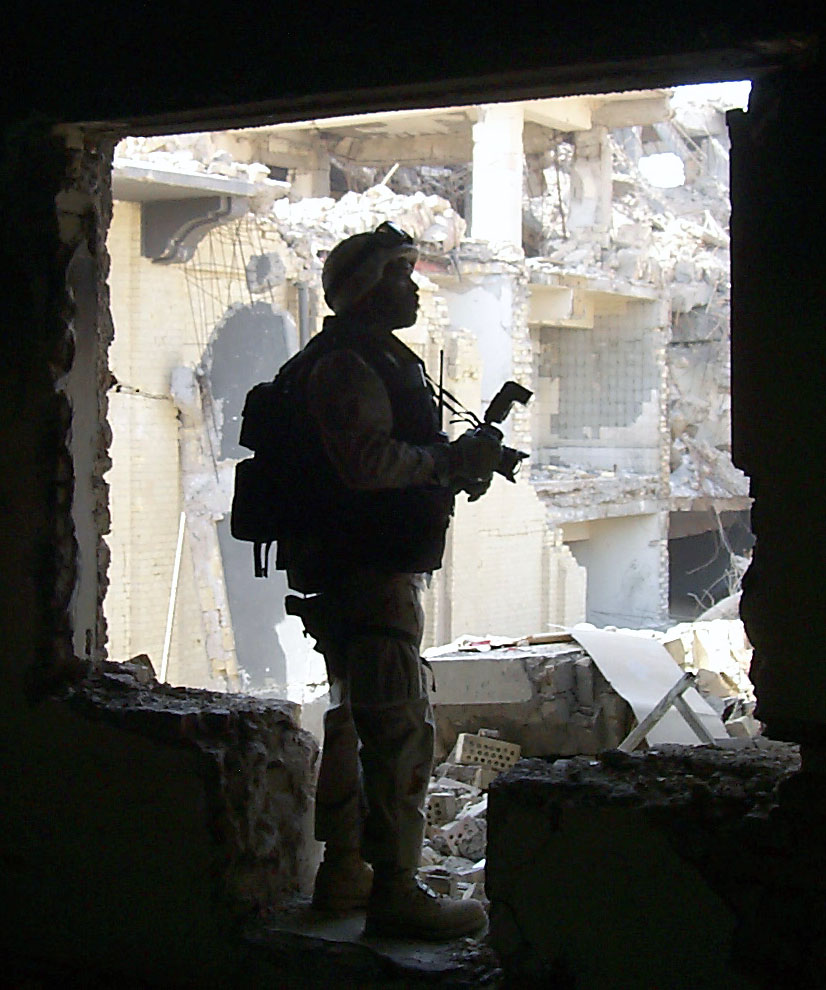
Picture perfect

BAGHDAD, Iraq -- Master Sgt. Michael Best searches for photo opportunities inside a bomb-damaged Iraqi Ministry of Defense building here. Best is a combat-camera photographer deployed from Charleston Air Force Base, S.C.